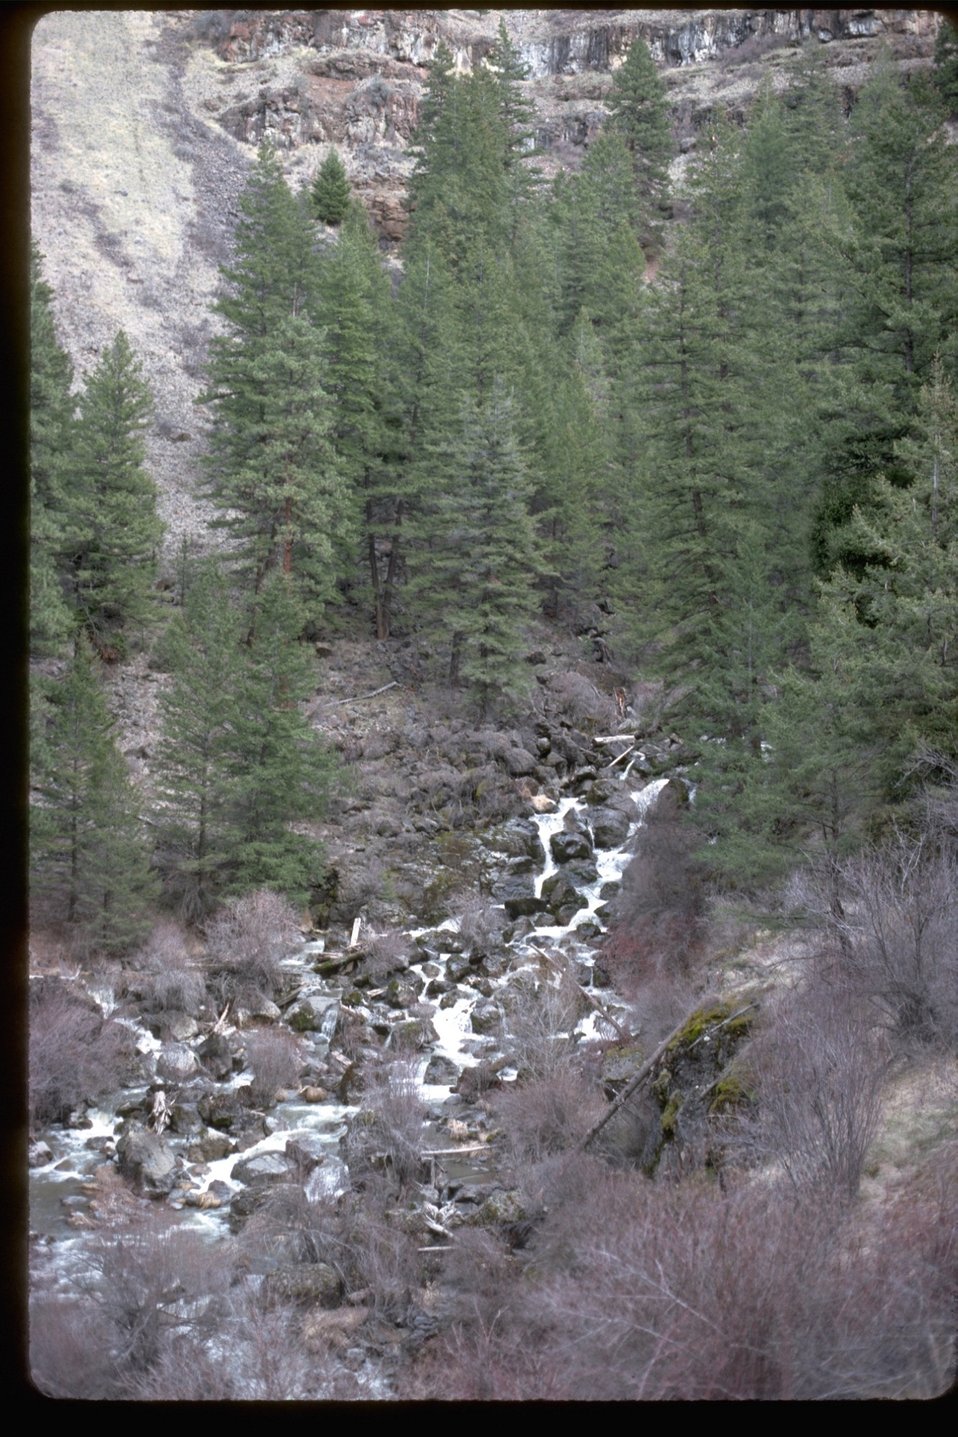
Falls on the South Fork of the John Day River.